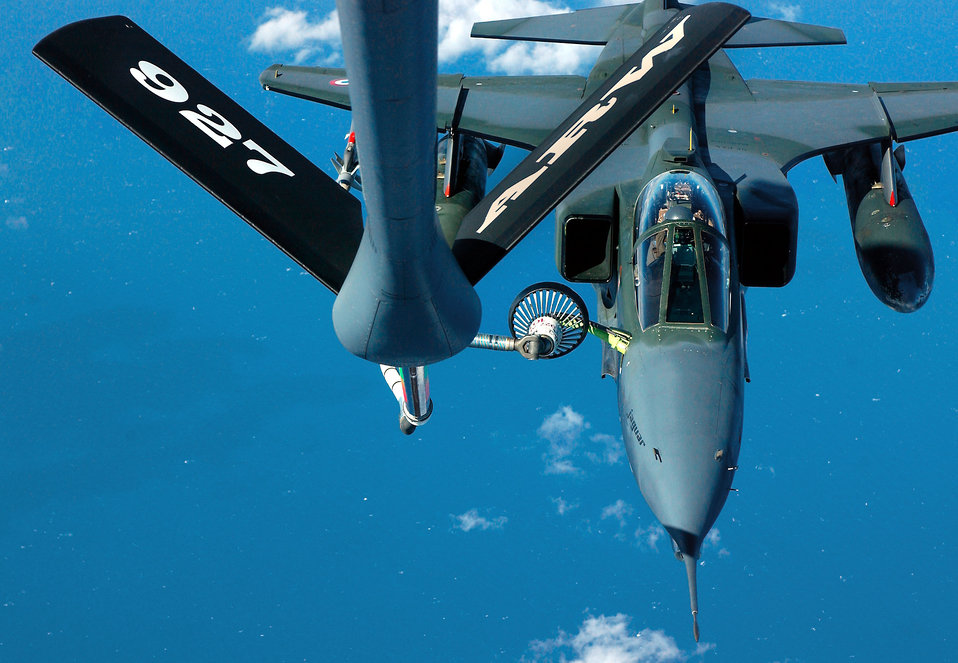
Pulling up to the pump

OPERATION JOINT FORGE -- A French Jaguar prepares to be refueled from a U.S. Air Force KC-135 Stratotanker over the Adriatic Sea before preforming a reconnaissance over Bosnia. The aircraft and its squadron supports Operation Joint Forge in Bosnia as part of the